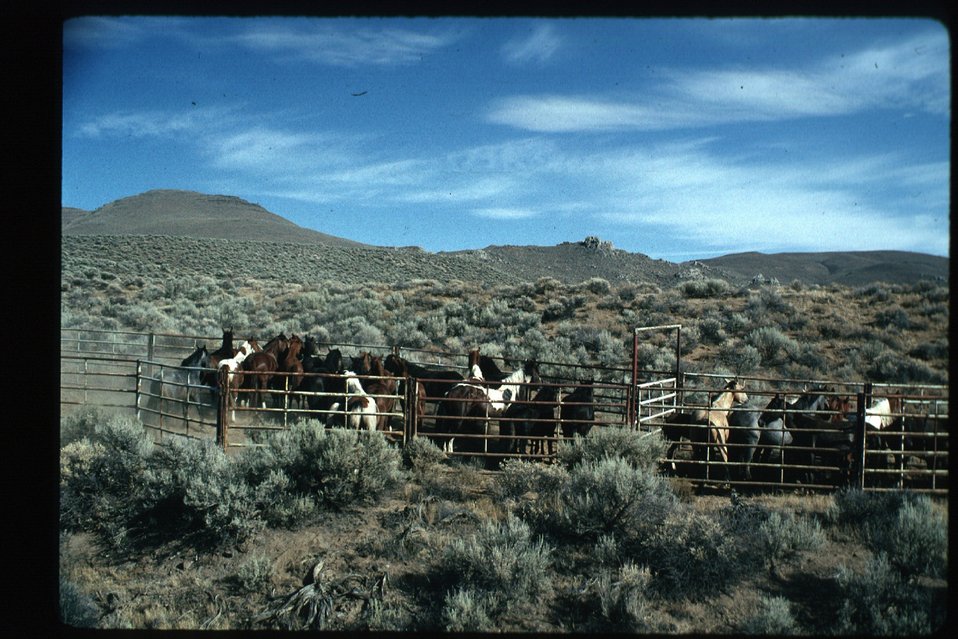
Penned wild horses Wild Horse and Burro Adoption Program LSRD Lower Snake River District